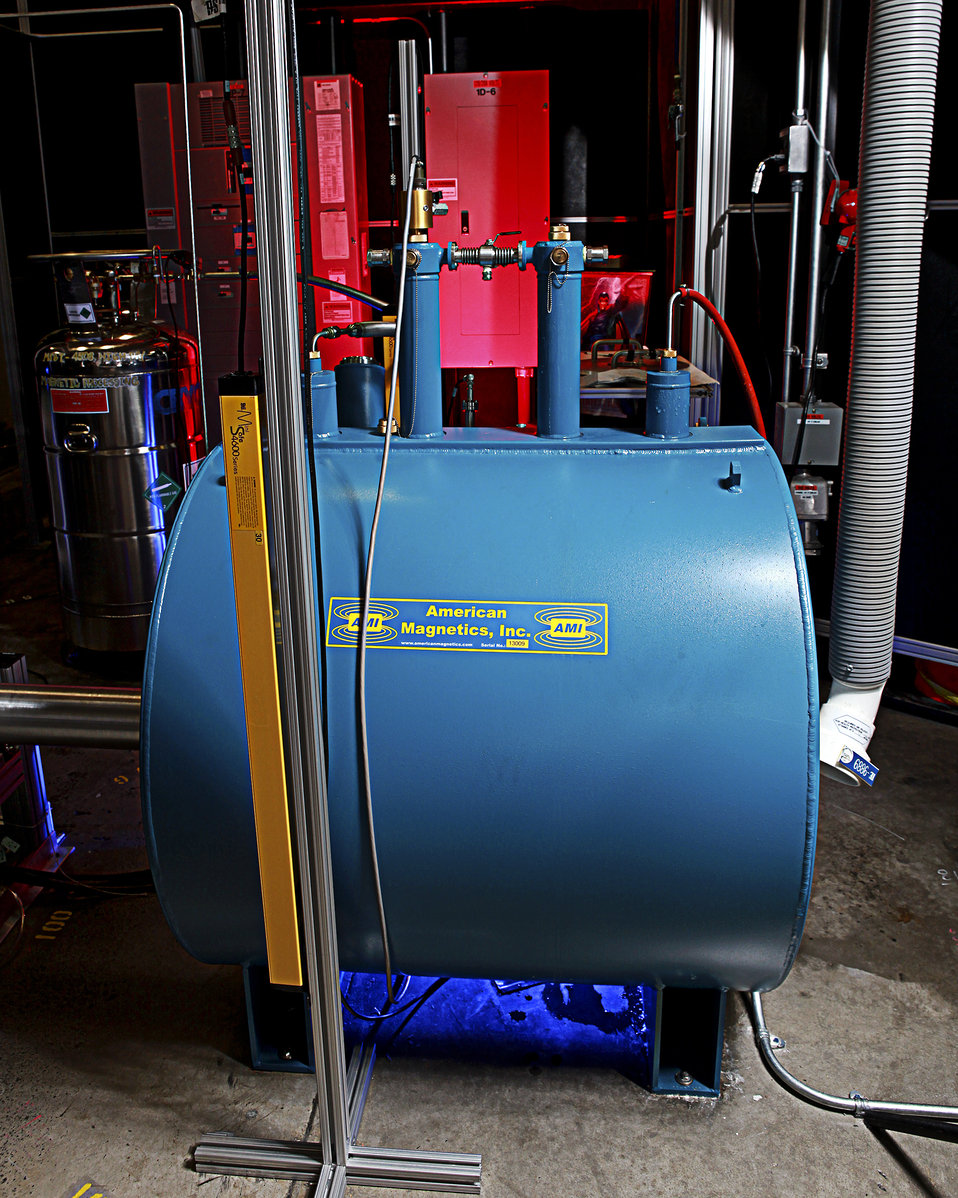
Shown is the thermomagnetic processing technology at Oak Ridge National Laboratory.

Thermomagnetic Processing Technology uses superconducting magnets to cut down on energy use in typical heat treating process. High magnetic field processing also reduces residual stress (post-heat treating stress) and can eliminate unwanted material phases, thus making costly and energy-intensive specialized thermal processing step necessary.